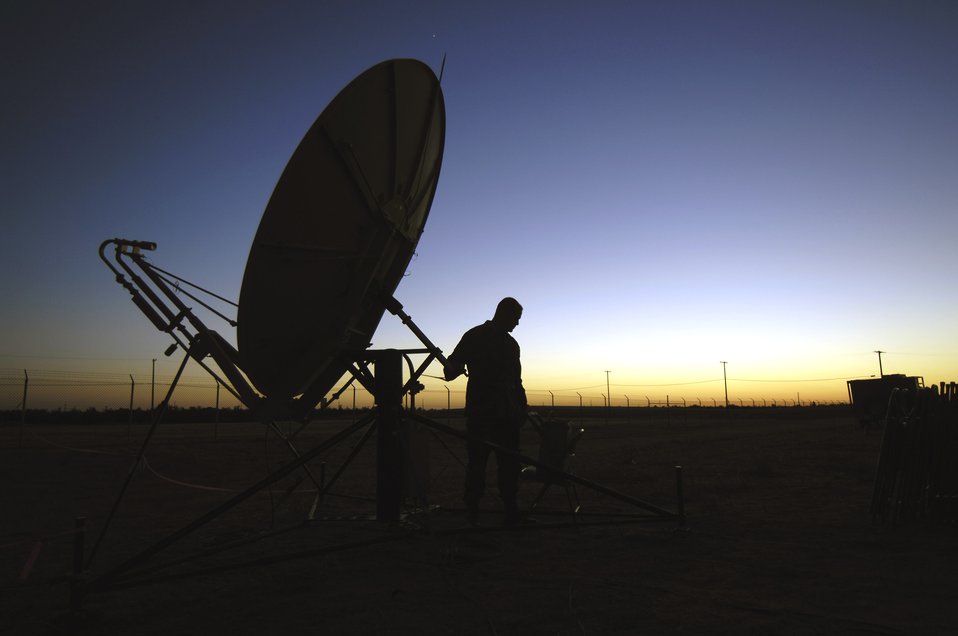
Satellite check

Tech. Sgt. John Stutts checks a USC-60 satellite terminal June 6 at Castle Air Field, Calif., in support of Operation HYDRA. Operation HYDRA exercises the 615th Contingency Response Wing's ability to